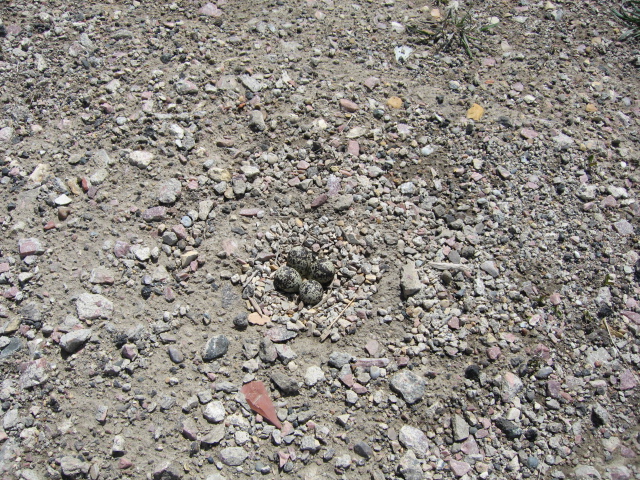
WPA Wildlife

Killdeer Nest